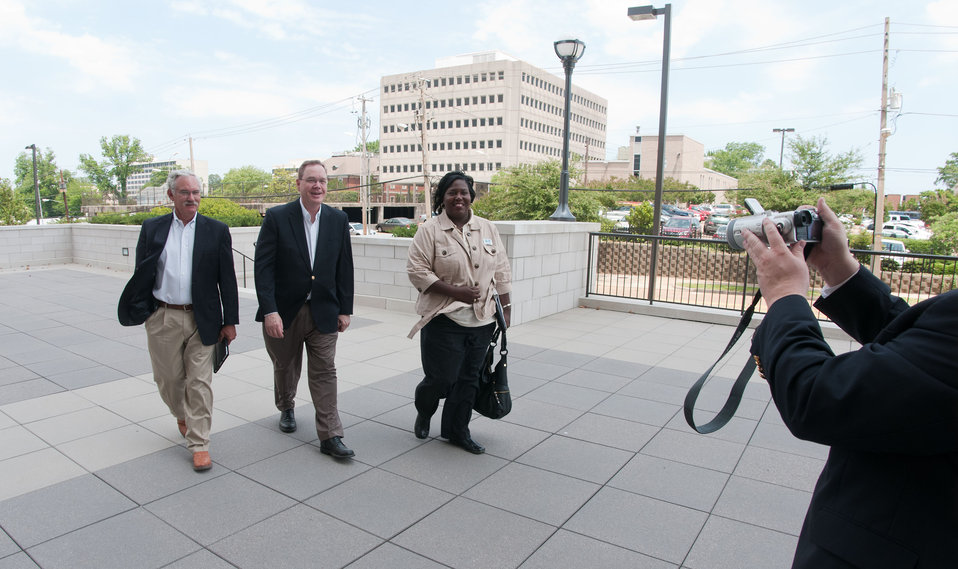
U.S. Department of Agriculture Undersecretary for Rural Development Dallas Tonsager (center), Acting Under Secretary Farm and Foreign Agriculture Service Michael Scuse (left), and Rural Development Mississippi State Director Trina N. George (right) arrive at downtown Jackson, Mississippi on Thursday, May 19, 2011 to meet with Governor Haley Barbour and attend task force meetings regarding flooding from the Mississippi River.